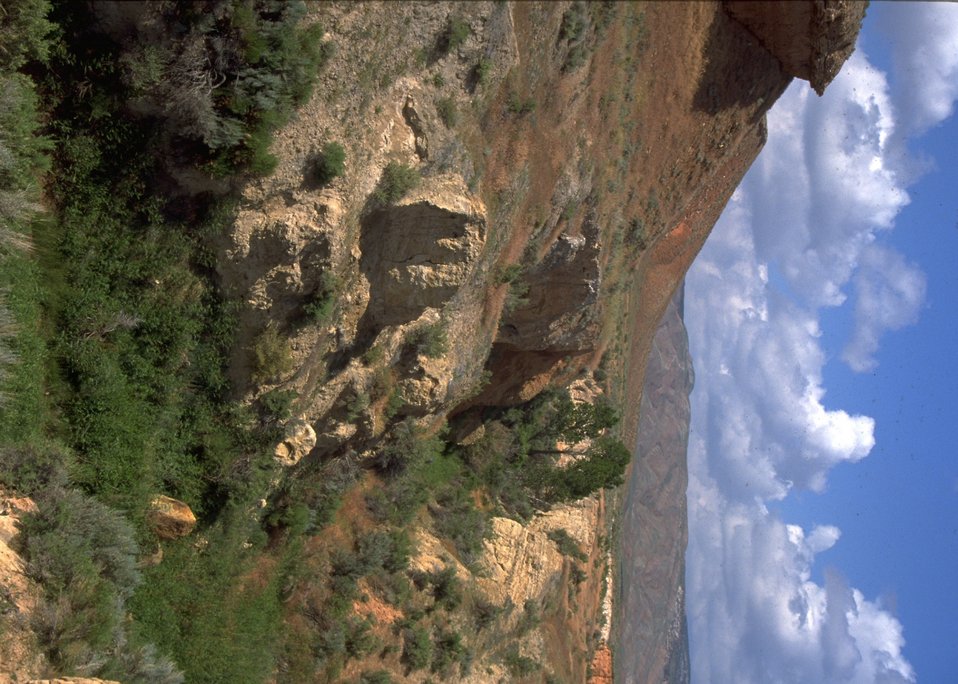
Scenic rock area.